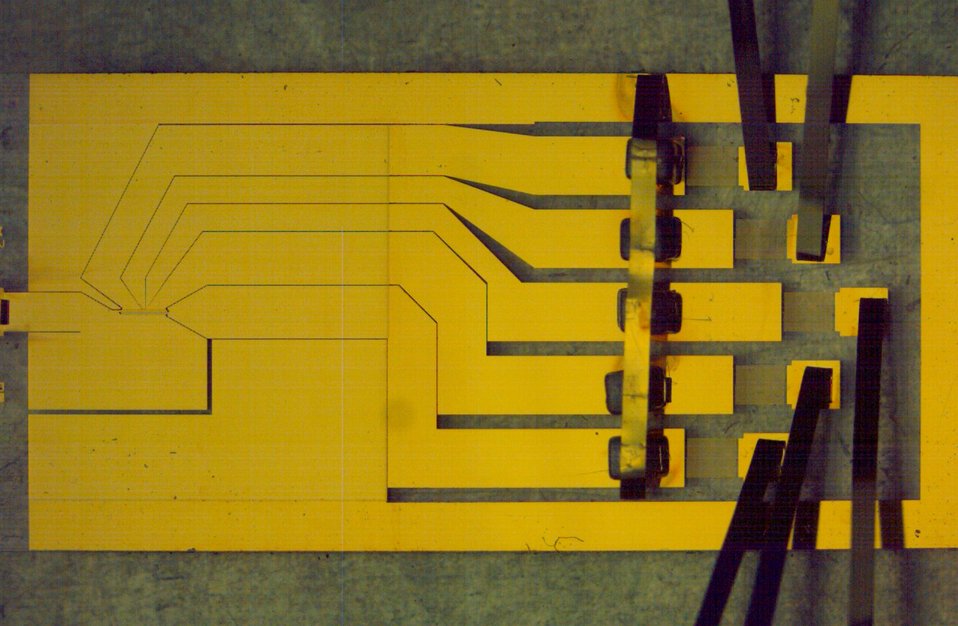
Planar Ion Trap

NIST's novel planar ion trap was designed to be easily mass produced, potentially enabling quantum computers large enough for practical use. The trap uses gold electrodes to confine magnesium ions 40 micrometers above the plane of the electrodes. Laser beams are used to create ions from the metal vapor and then cool them.